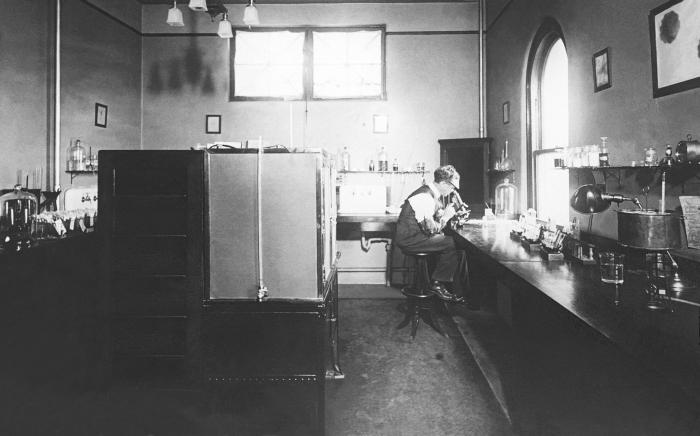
This historic 1915 photograph depicted the interior of the bacteriological laboratory of the Minneapolis, Minnesota water filtration plant.